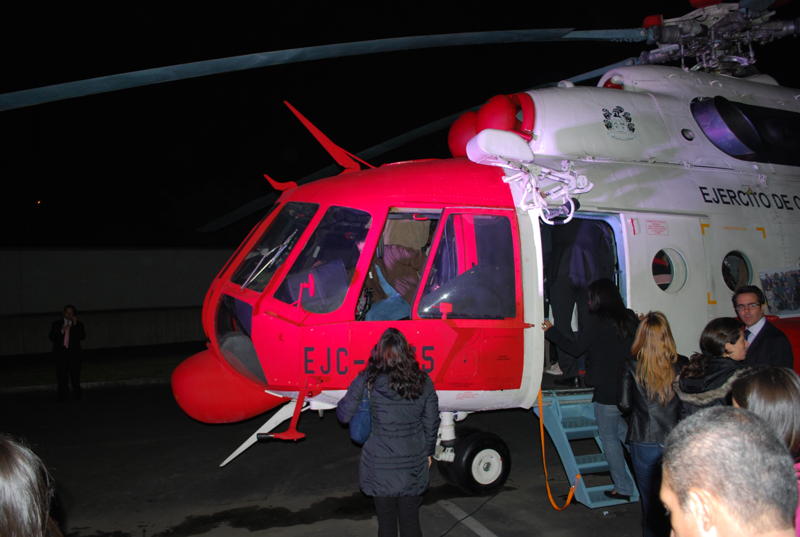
A “Trojan Horse” Helicopter Is Displayed

One of the 'Trojan Horse' helicopters used during Operación Jaque, which resulted in the release of 15 hostages, including three Americans, was displayed during the U.S. Independence Day “State Fair” Community Event at the U.S. Embassy Bogotá in Colombia, on July 2, 2010.